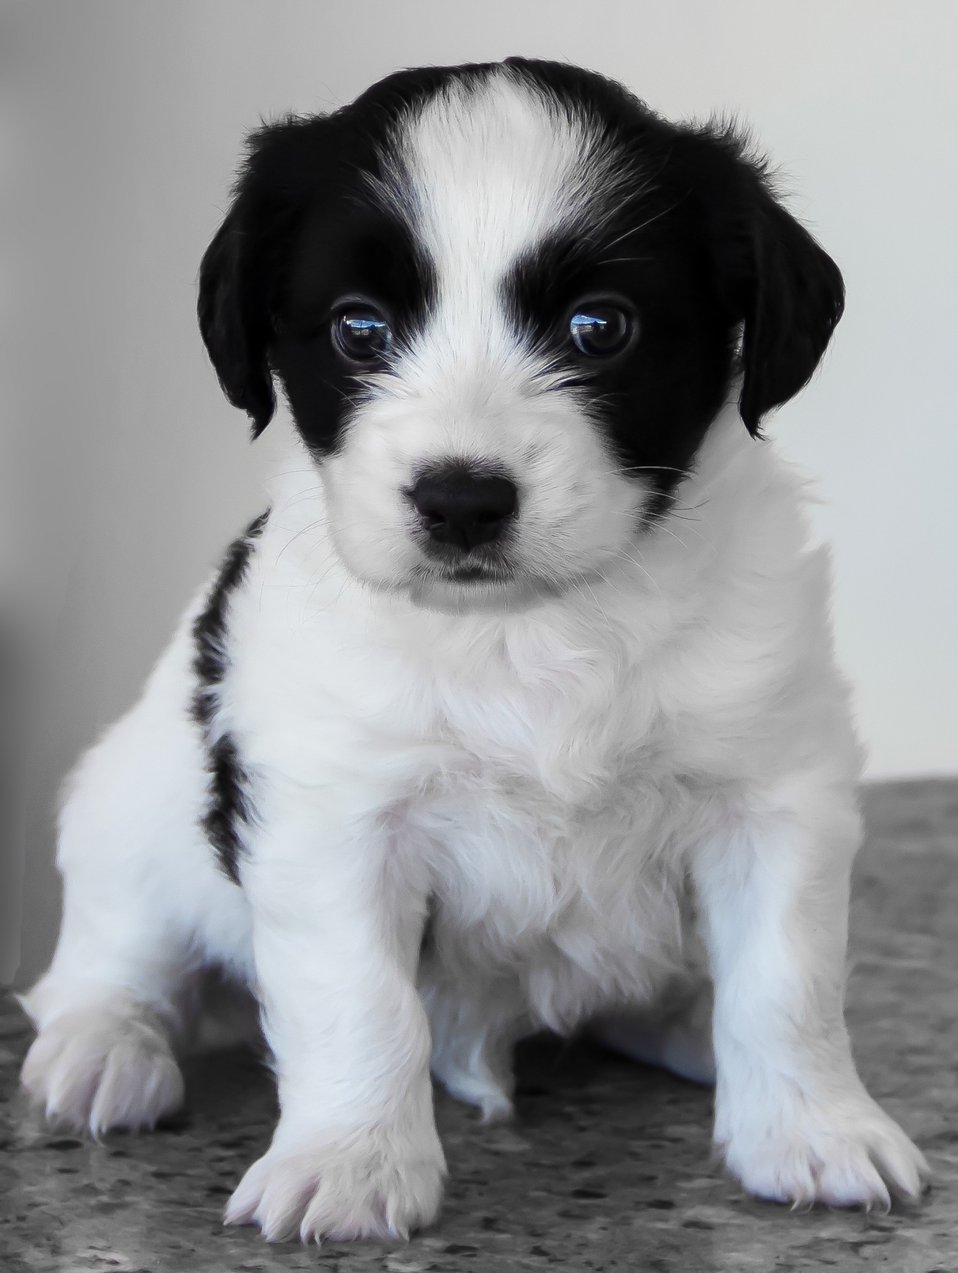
Cuteness

Adorable black and white puppy.